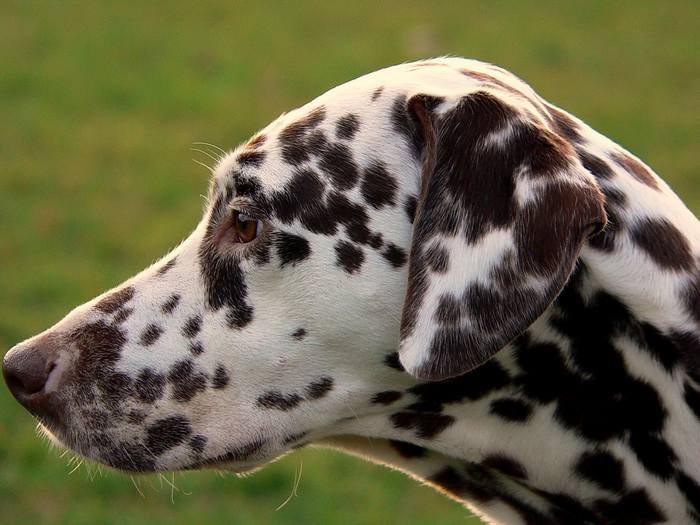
Deutsch: brauner Dalmatinerkopf A liver Dalmatian